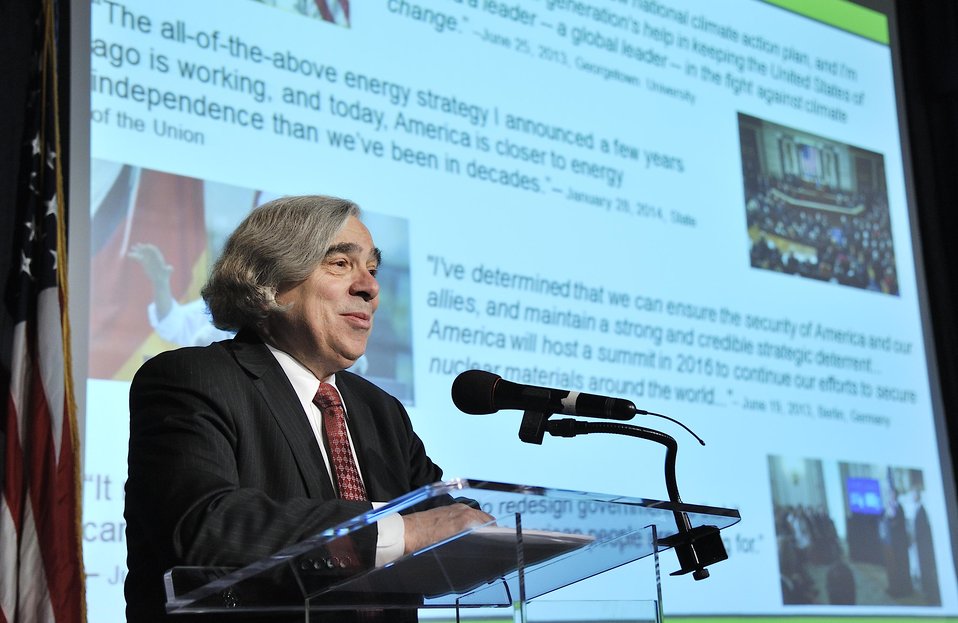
Ken Shipp/DOE Photo

SECRETARY E. MONIZ - 2014 DOE BUDGET ROLL OUT ON MARCH 4, 2014